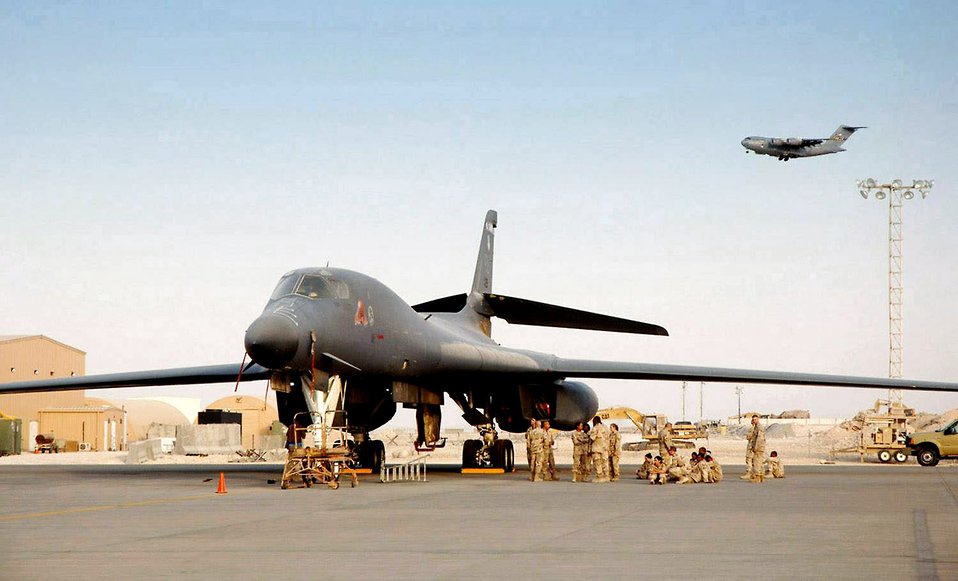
March 18 airpower summary: B-1B deters enemies

Maintainers ensure this B-1B Lancer is ready to go as a C-17 Globemaster III prepares to land at a forward deployed location in Southwest Asia.